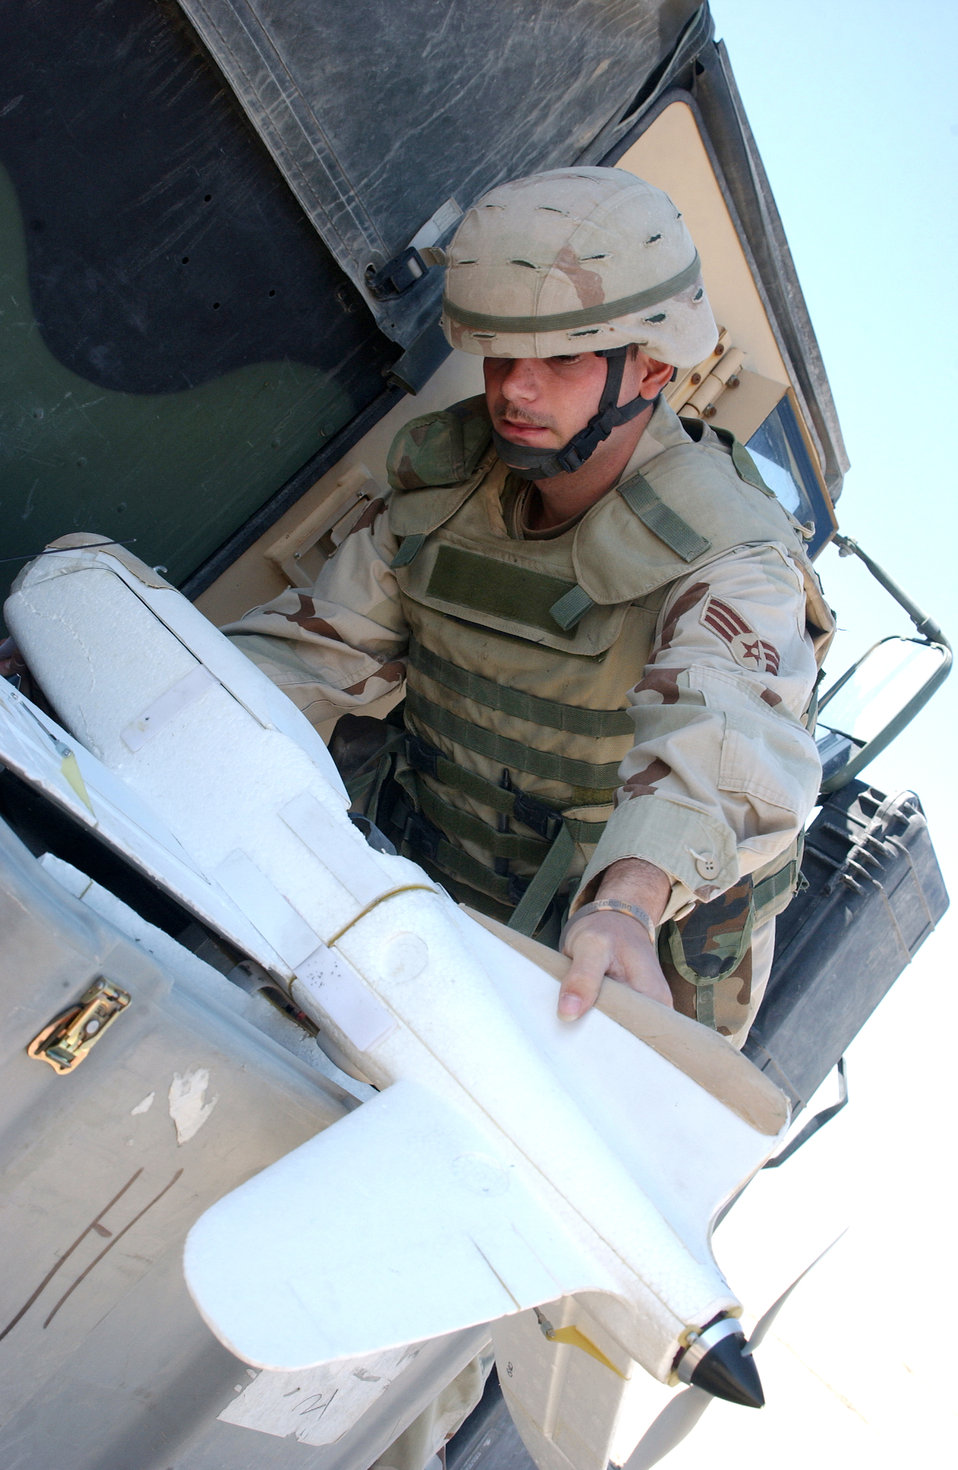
Mini-UAVs

ALI BASE, Iraq (AFPN) -- Senior Airman Shawn Fernandez puts together a miniature unmanned aerial vehicle before for a mission. The force protection airborne surveillance system plane is stored and transported in a protective box.